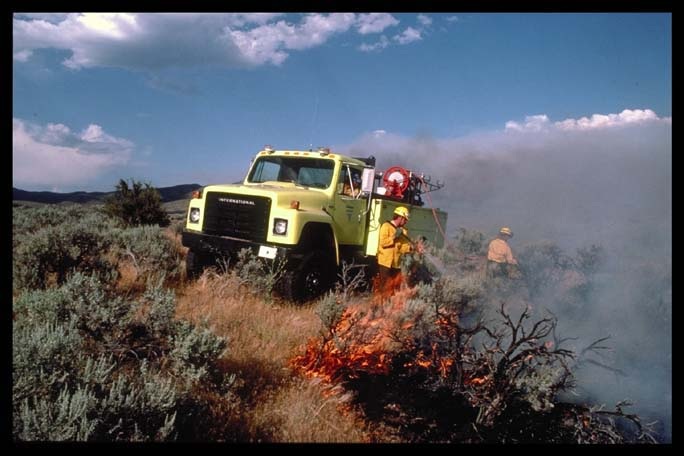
BLM wildland fire engine